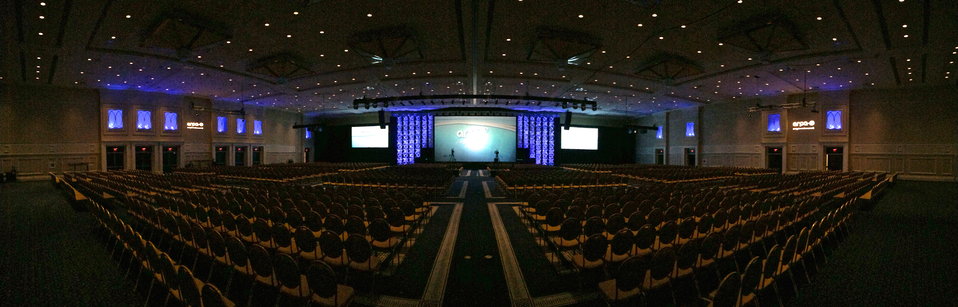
ARPA-E Energy Innovation Summit 2014

Monday was day one of the 2014 ARPA-E Energy Innovation Summit. Attendees heard from industry experts and thought leaders who are transforming our energy ecosystem. Stay tuned in the coming days for more photos -- and be sure to follow the Summit on Twitter using #eis14.